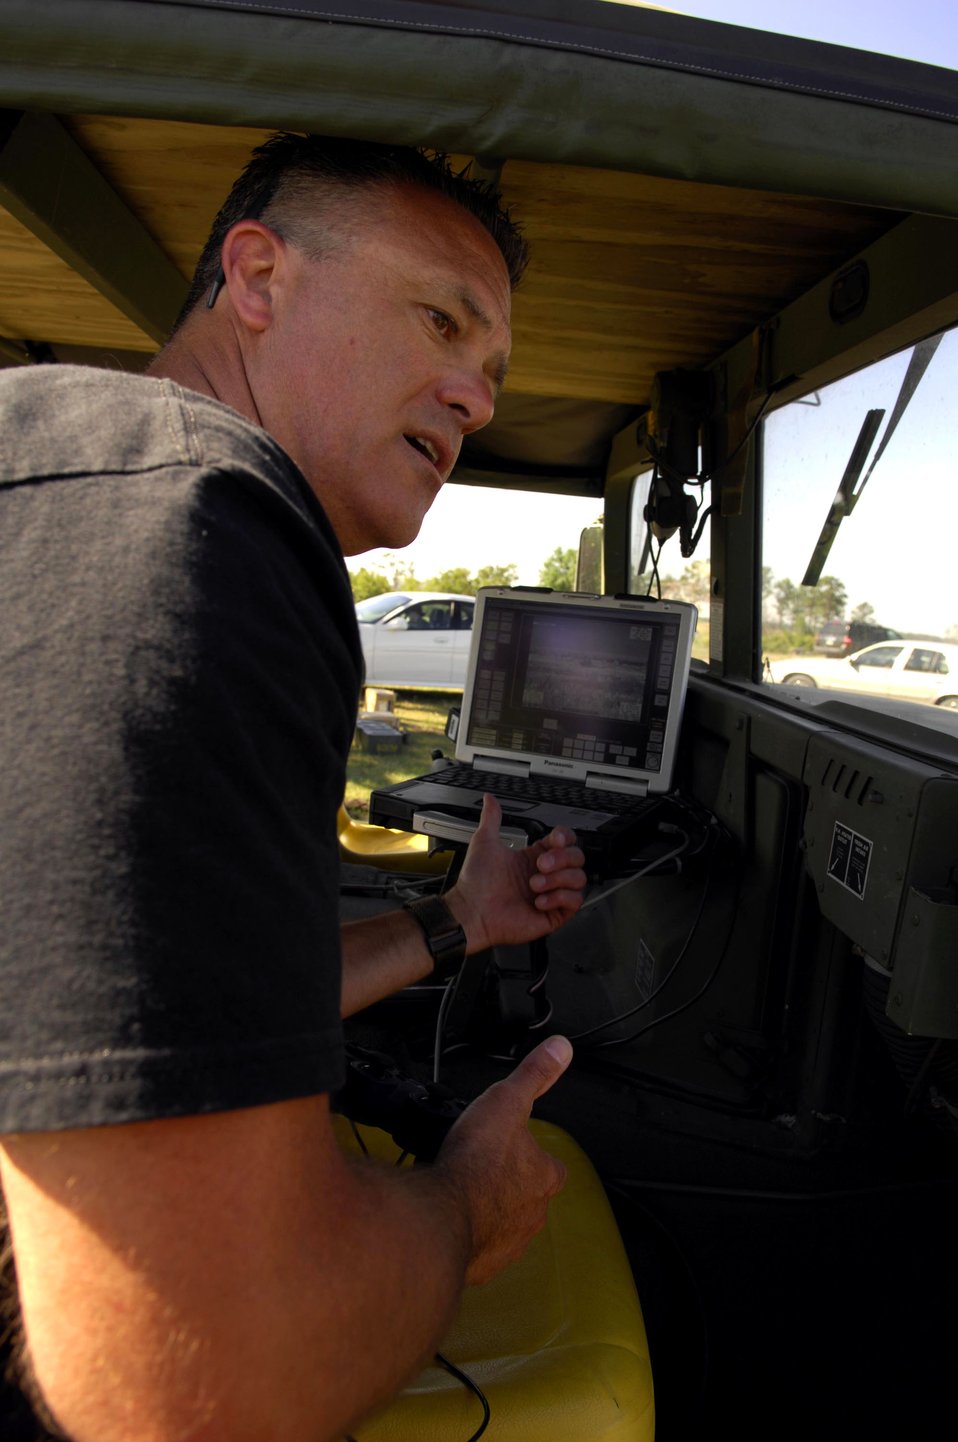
Battlefield technology key to Atlantic Strike V

Bob Raulerson, a marketing manager from Northrop Grumman, demonstrates the capabilities of